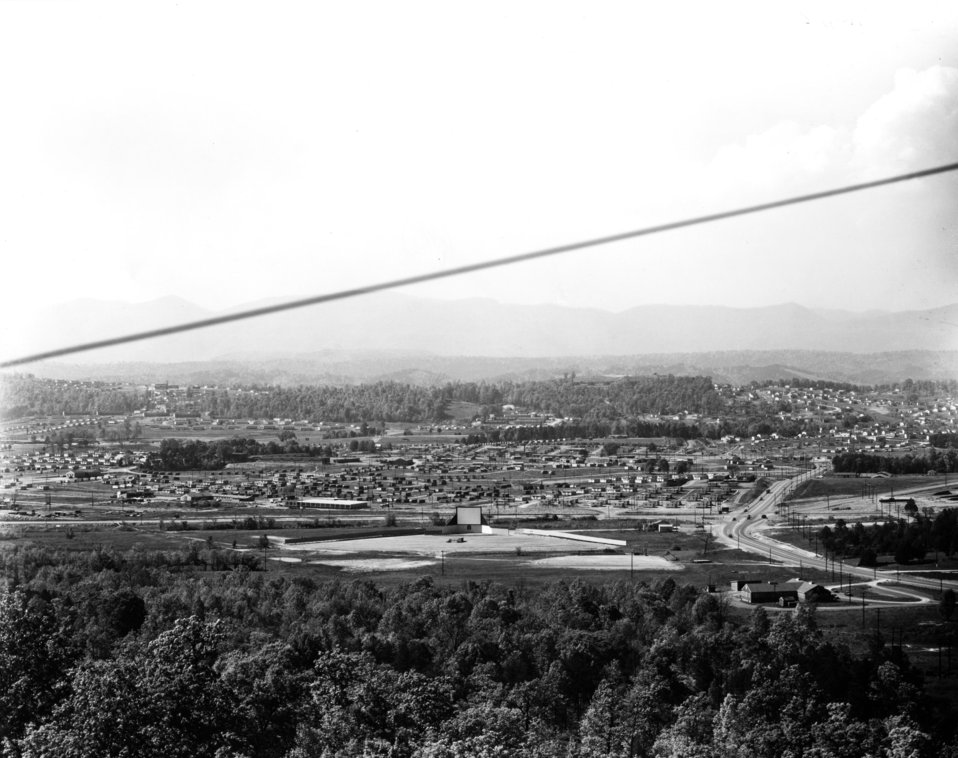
Aerial of Oak Ridge